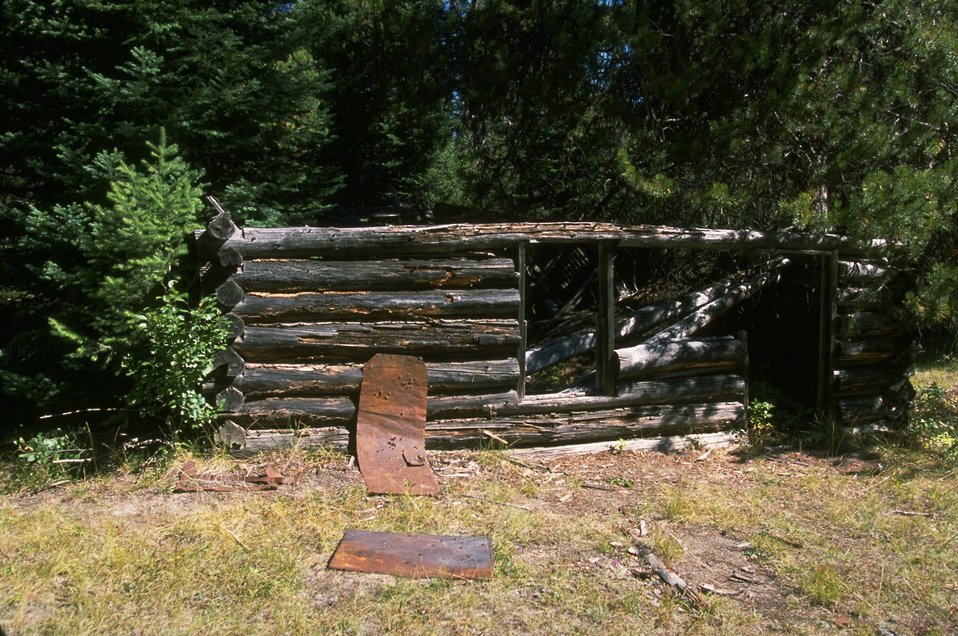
Coloma Ghost Town--collapsing cabin